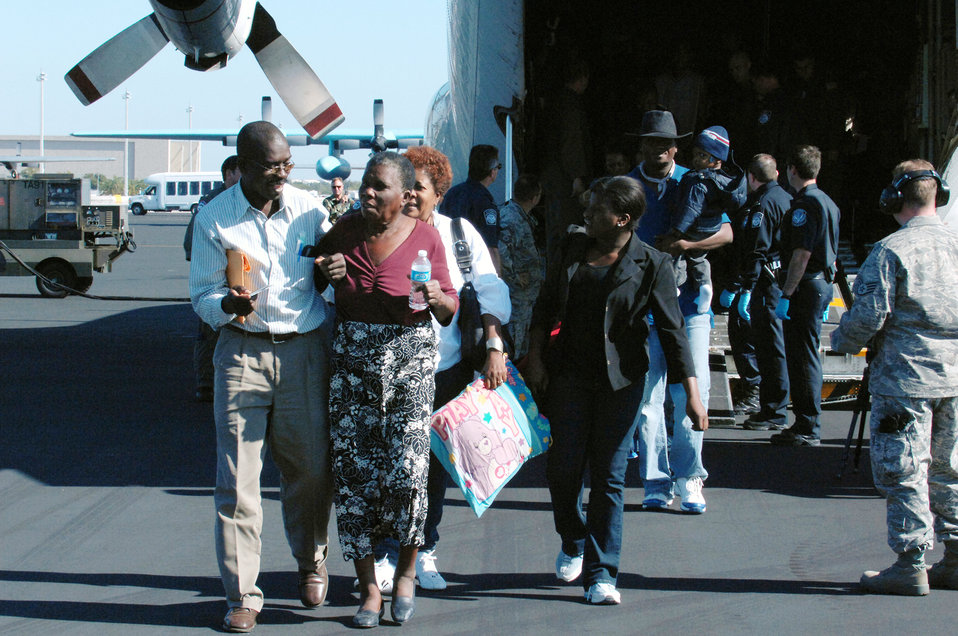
Operation Unified Response

Servicemembers assist with transporting Haiti evacuees to Homestead Air Reserve Base, Fla., Jan. 20, 2010. U.S. Customs and Border Patrol agents are on hand at Homestead ARB to help process American citizens back to the United States from Haiti.